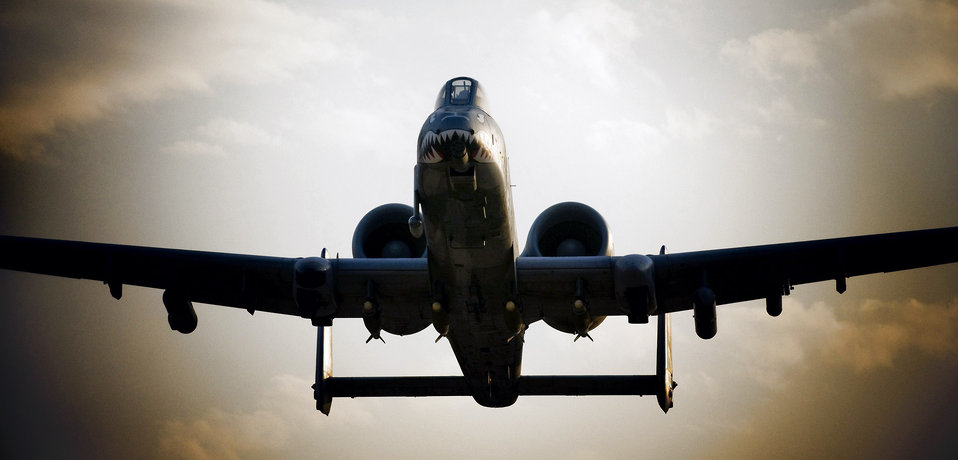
Ready to go

An A-10 Thunderbolt II takes off Oct. 18 at Bagram Airfield, Afghanistan.